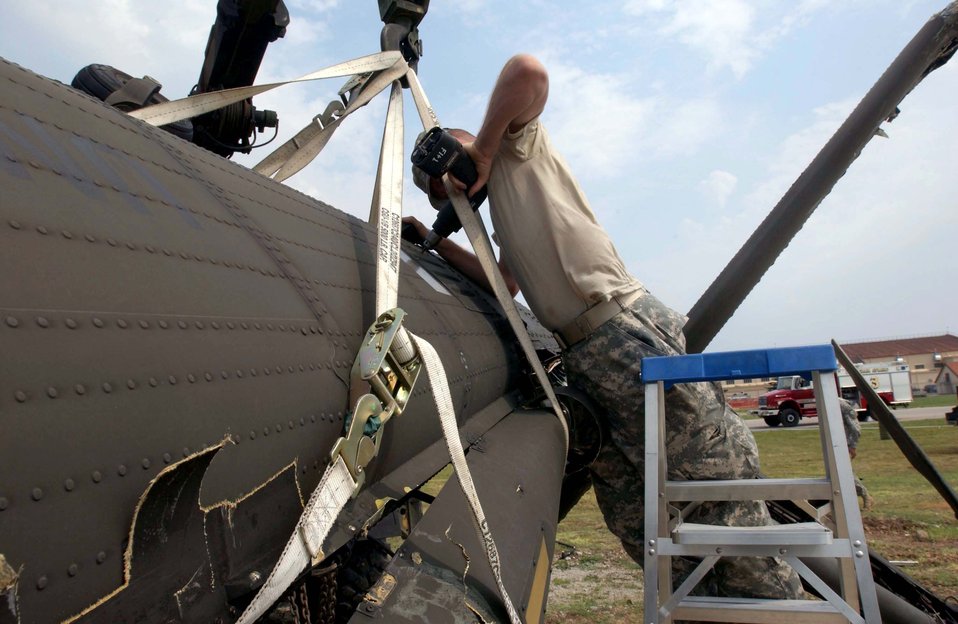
This side up

Army Spc. Christopher Grunzinger prepares to stabilize an aircraft at Aviano Air Base, Italy, on July 6. The aircraft suffered damage after a severe thunderstorm with wind gusts that measured up to 82 knots. The storm tore through Aviano on June 29, and caused basewide damage estimated at $3.5 million.